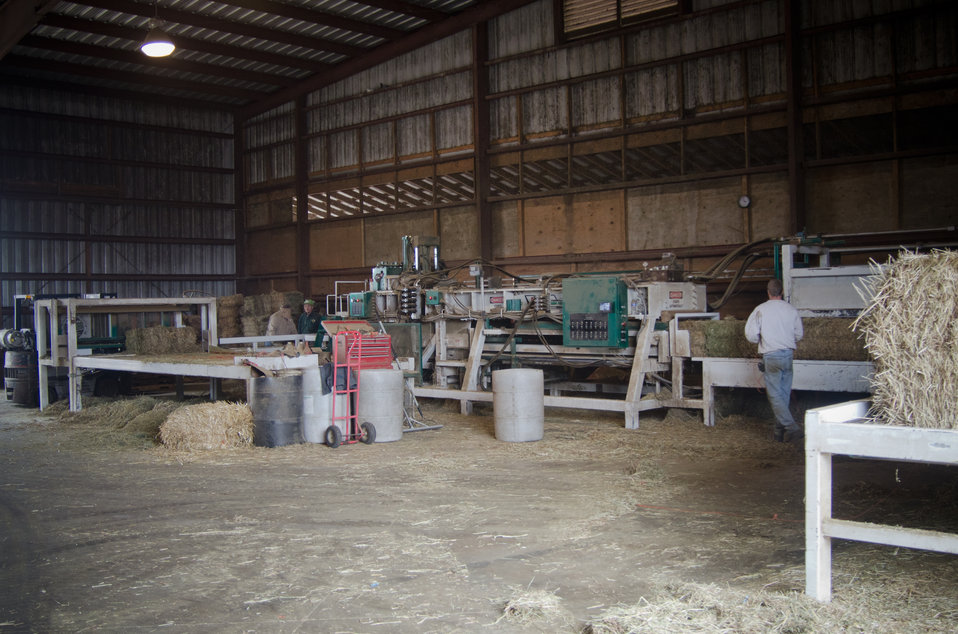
A hay compactor at the Heidel Hollow Farms, on Wednesday, April 20, 2011. A family owned farm since 1852 and is currently an 1,800 acre operation in Germansville, PA. Led by David Fink, President of Heidel Hollow Farms, they mainly produce and compact hay for export and grow produce on 300 acres for local. With the financial help of the U.S. Department of Agriculture (USDA) an 896 panel solar array was recently installed on non farmable diversion ditches. Rated at 200 kilowatts, they project 240 megawatts of electricity to be produced each year, providing up to 70% of the farms electrical needs. Additionally, USDA financial assistance made it possible to replace the hay compactor’s diesel engines with clean low-maintenance, low operating cost electric motors to power the compactor's hydraulic system. The compactor increases the density of baled hay by two and half times for more efficient shipping to overseas customers.